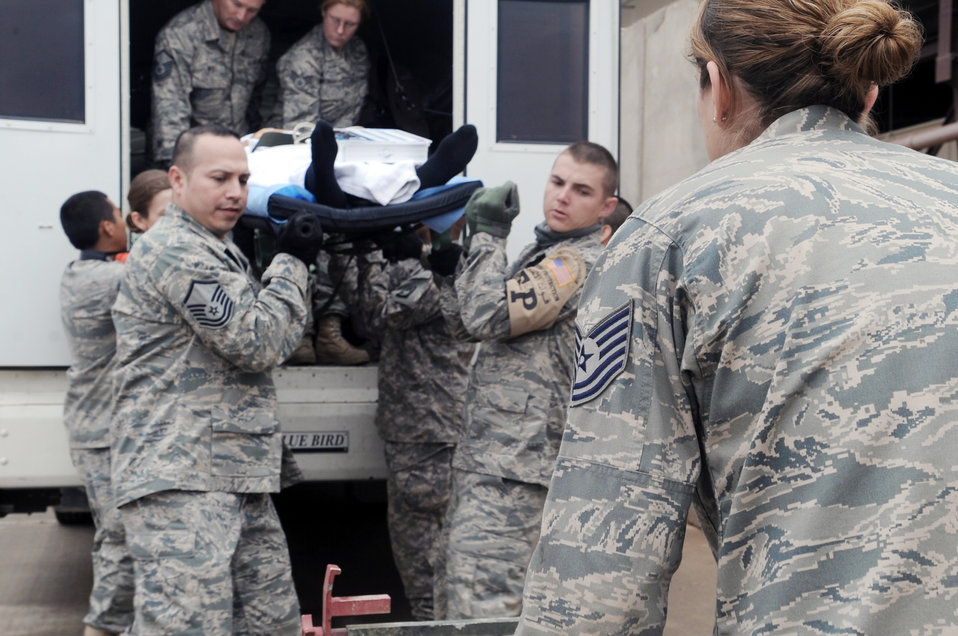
Balad become divert base for wounded troops

332nd Expeditionary Medical Group members unload a patient from a bus to be transferred to the Air Force Theater Hospital during an aeromedical evacuation mission April 17, 2010, at Joint Base Balad, Iraq. The 332nd EMDG is expecting the average patient load to increase by about 50 patients per day.